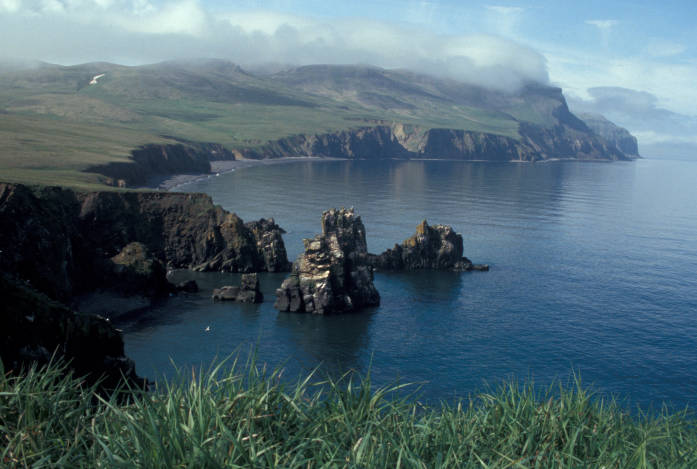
Hall Island

Alaska Maritime National Wildlife Refuge